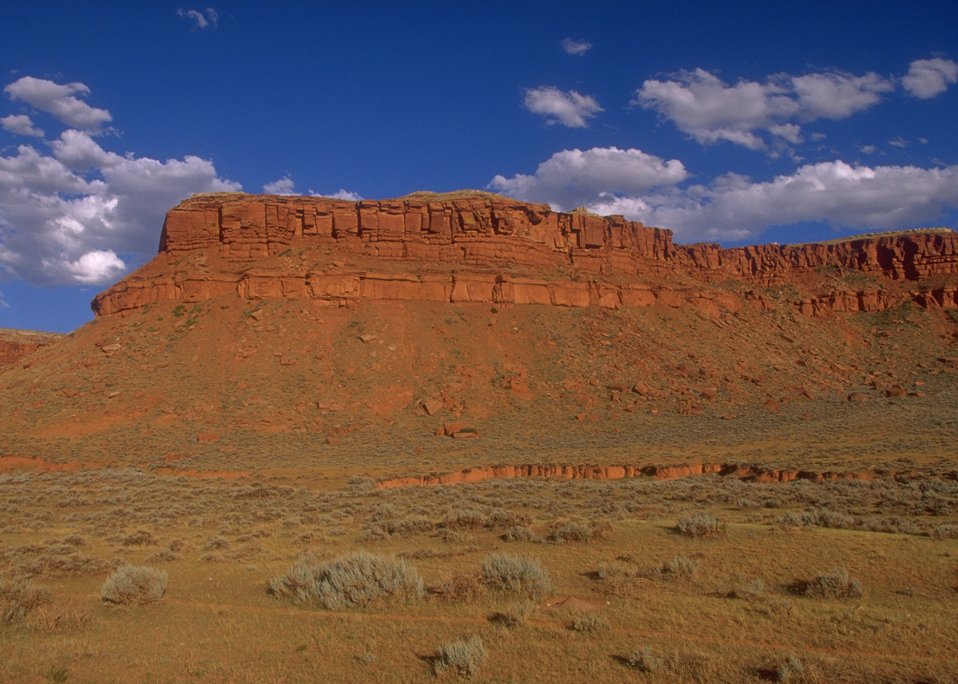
View of Red Wall, Buffalo Field Office.